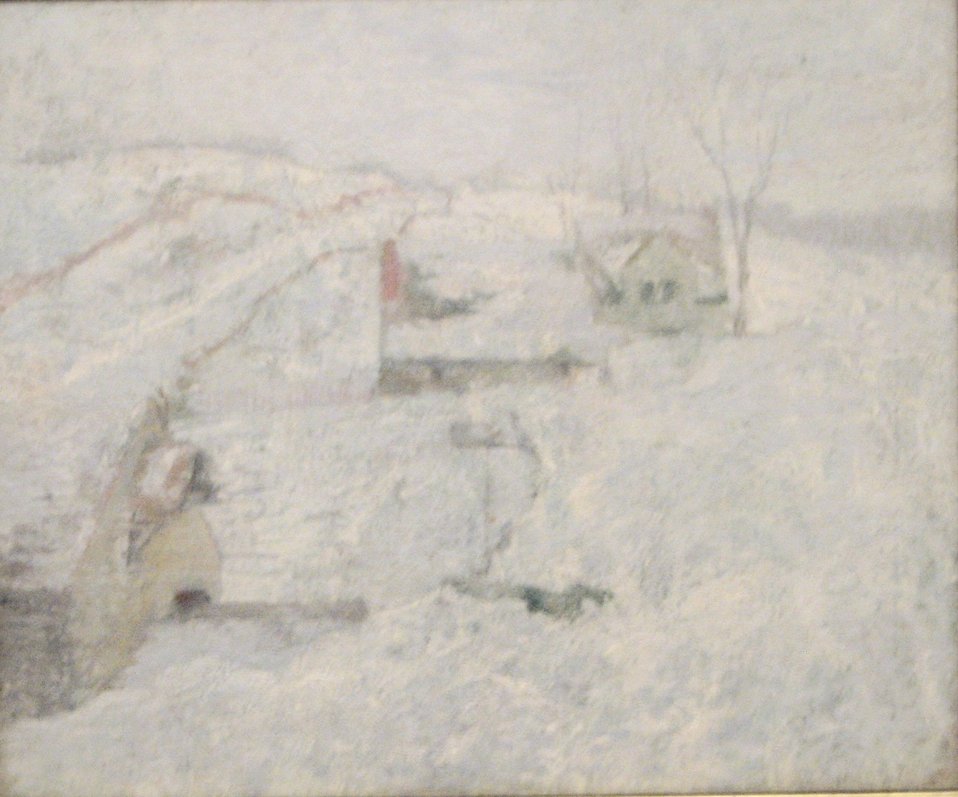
'Greenwich Hills in Winter', painting by John Henry Twachtman, late 1800s, Denver Art Museum